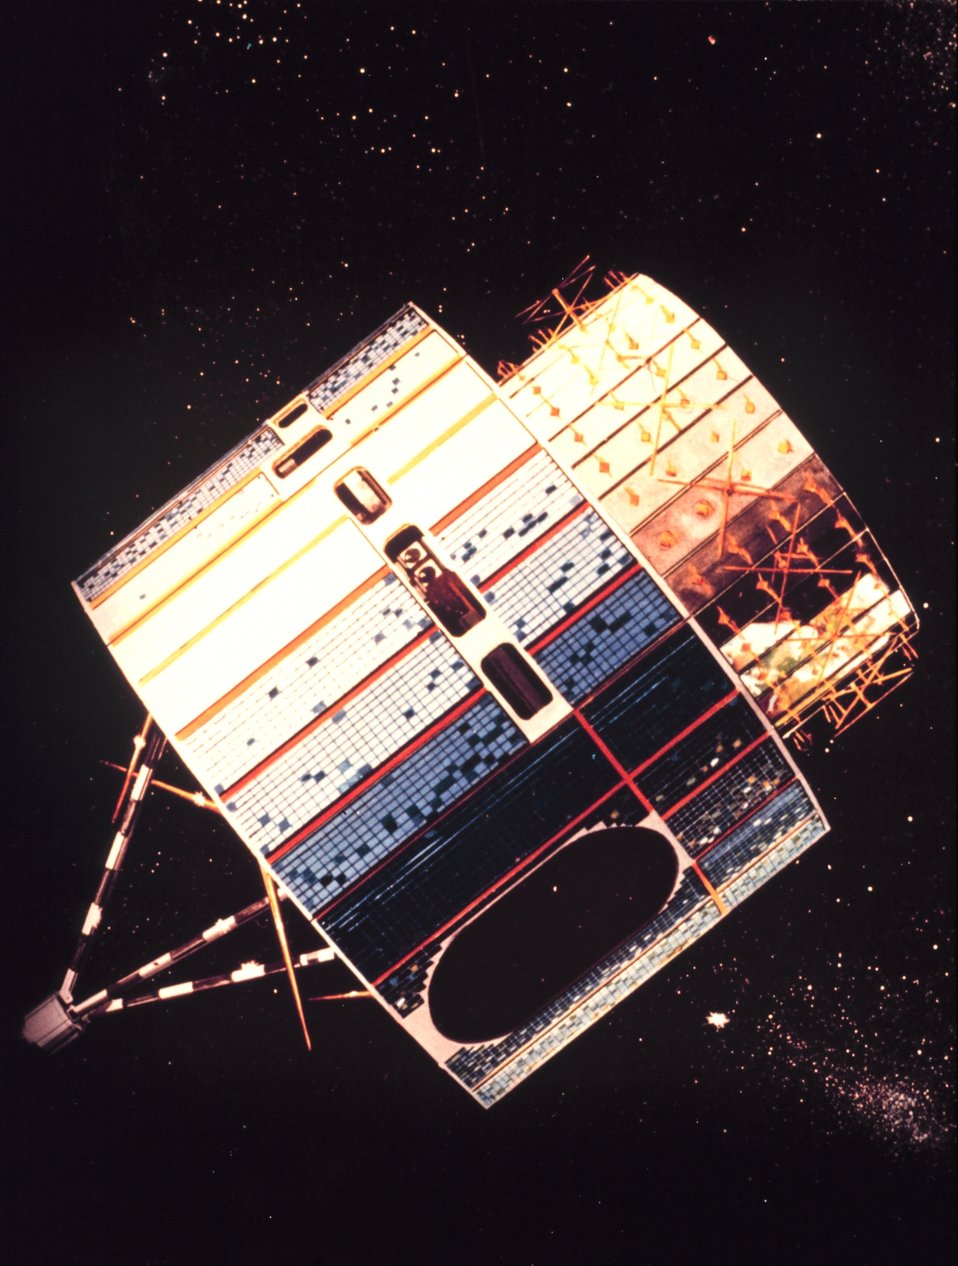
Graphic of the Synchronous Meteorological Satellite, the forerunner of the GOES satellites.